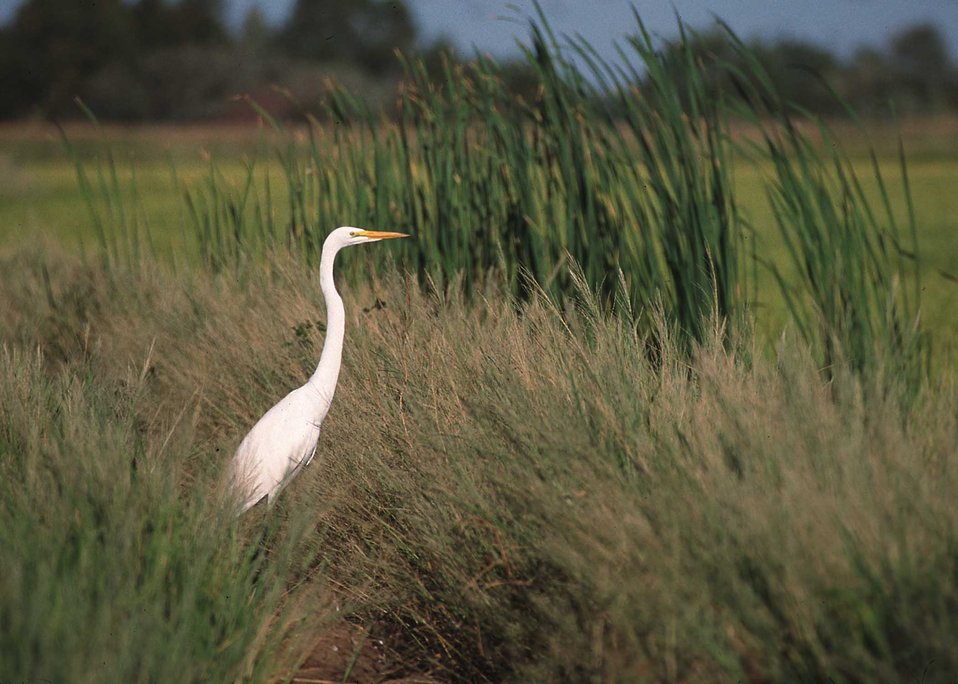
Common egret in grassy area near rice field in Northern California.